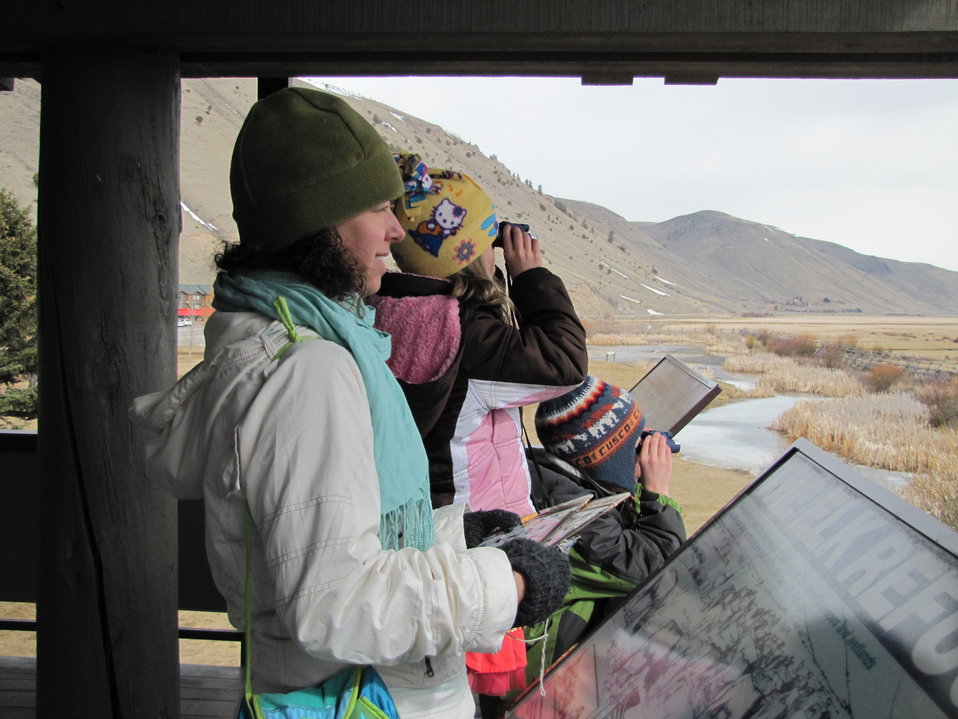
Who Can Spot Something First?

On a chilly March morning, a family on spring break looks for wildlife on the National Elk Refuge from the viewing deck at the Jackson Hole & Greater Yellowstone Visitor Center.